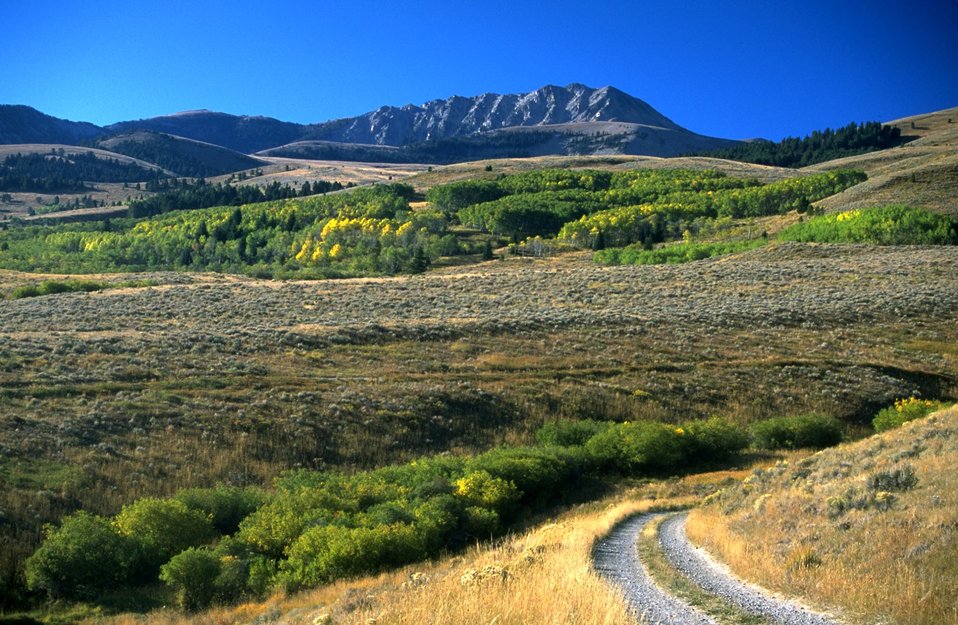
Fall Foliage - Baldy Mountain in background